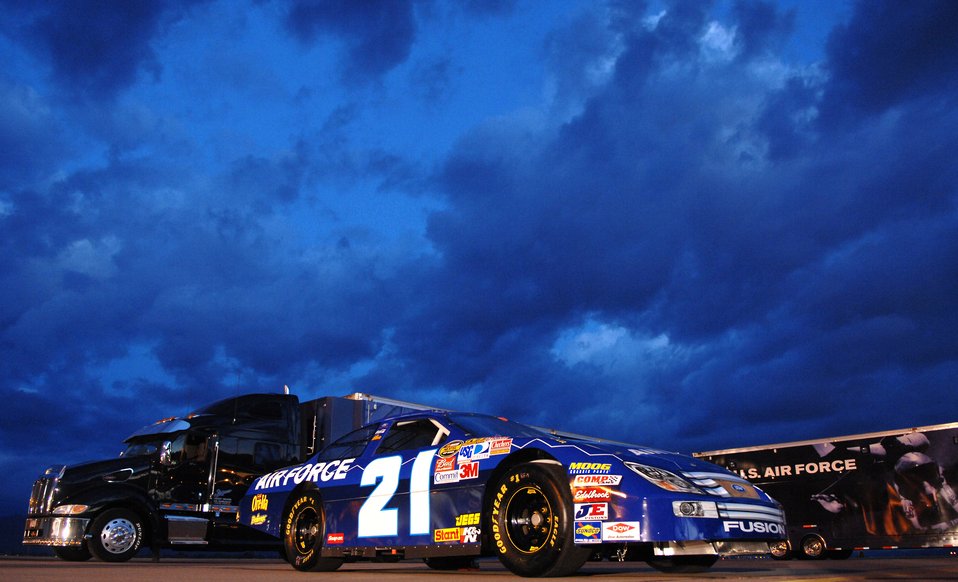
Weather forecaster brings morning show to Luke AFB

The Air Force NASCAR show vehicle served as a backdrop for Good Morning Arizona, a morning show filmed at Luke Air Force Base, Ariz., March 22. The show featured demonstrations from different Air Force career fields and helped promote Air Force Week.